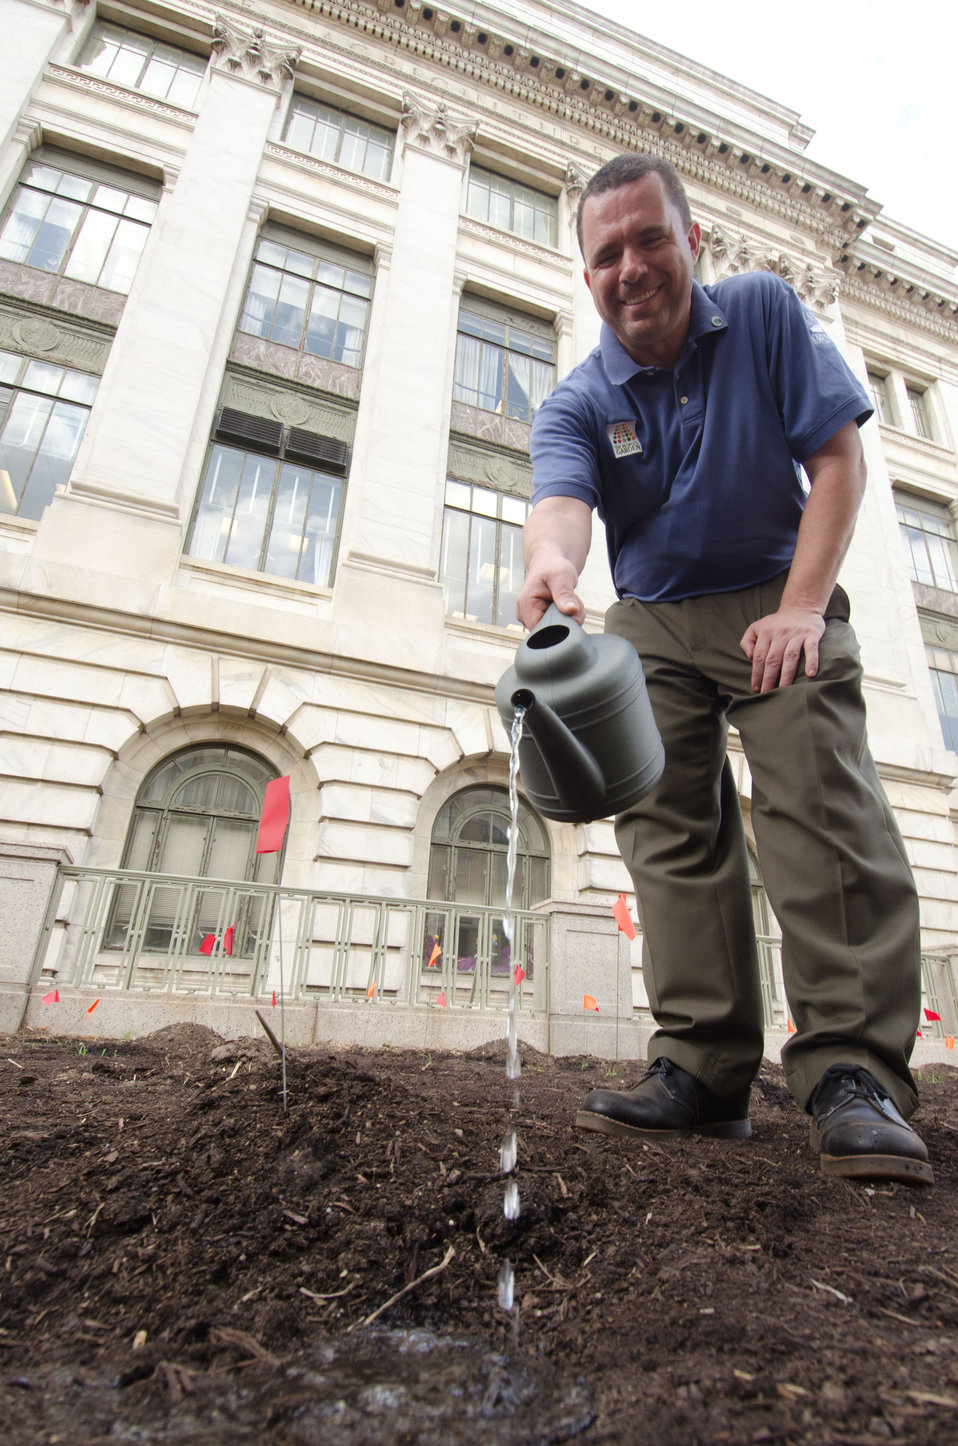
Executive Master Gardner John Galbraith waters freshly planted seeds in The Roots of American Agriculture garden, part of the U.S. Department of Agriculture headquarters, home of the People’s Garden, in Washington, DC, on Wednesday, April 21, 2011. More than 30 Students from Eastern and Western Tribes, Southeast Alaska, and Tuba City, Arizona came to the Nation’s Capitol finished planting vegetable seeds that are indigenous to North America.